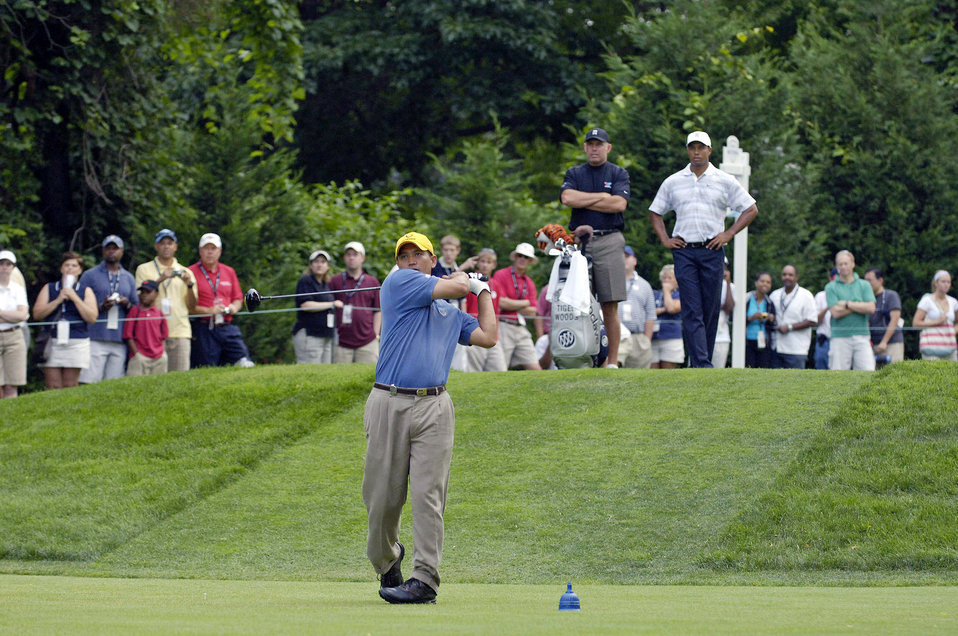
Airman tees it up with the best in the world

Tech. Sgt. Andy Amor tees off July 4 during a Pro-Am tournament at the Congressional Country Club in Bethesda, Md. as professional golfer Tiger Woods and his caddie Steve Williams watch. Sergeant Amor was selected to represent the Air Force in the event. Mr. Woods was the event host as well as a contestant. Sergeant Amor is with the 316th Civil Engineer Squadron at Andrews Air Force Base, Md.